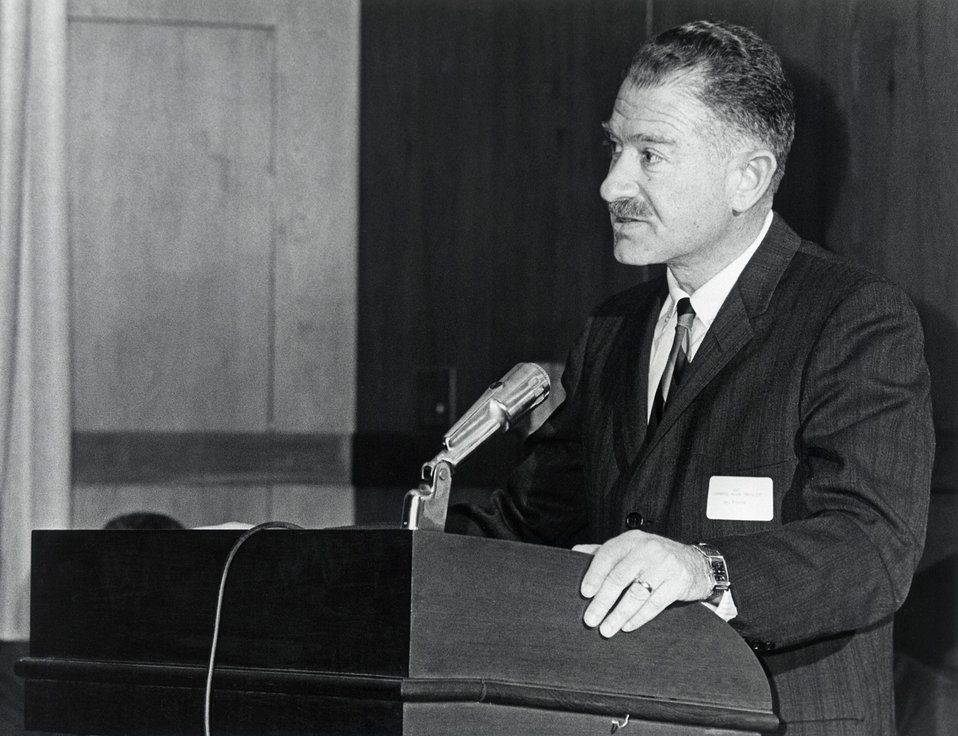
E. O. Lawrence Awards, 1967. Carnegie Institution Auditorium. Dr. Mortimer M. Elkind.